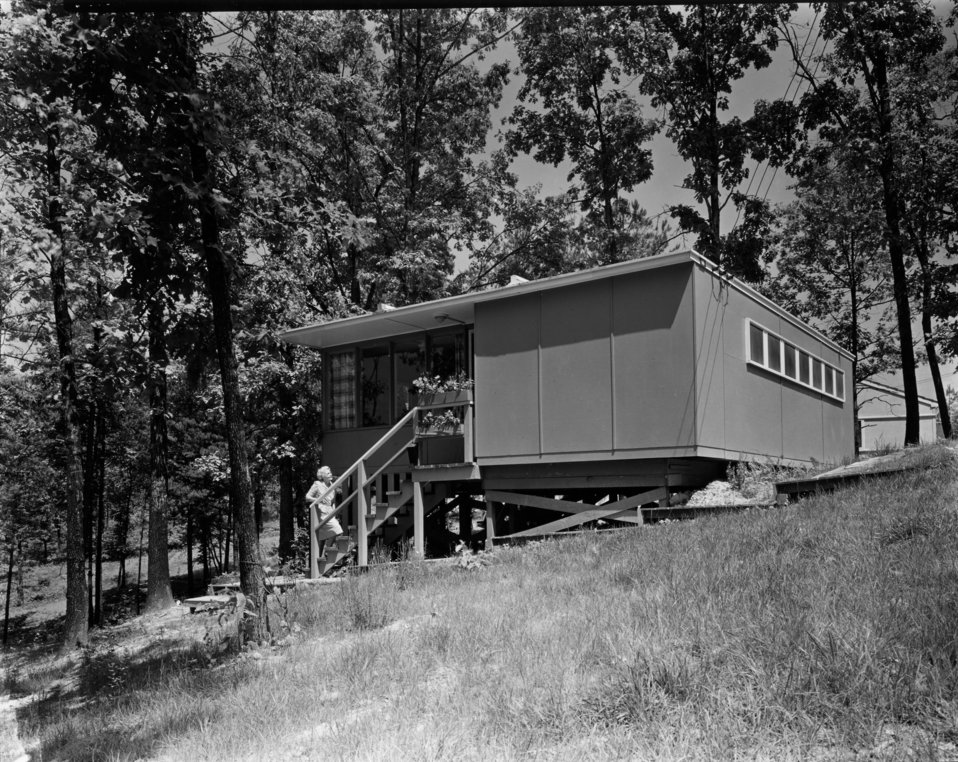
Housing at Oak Ridge